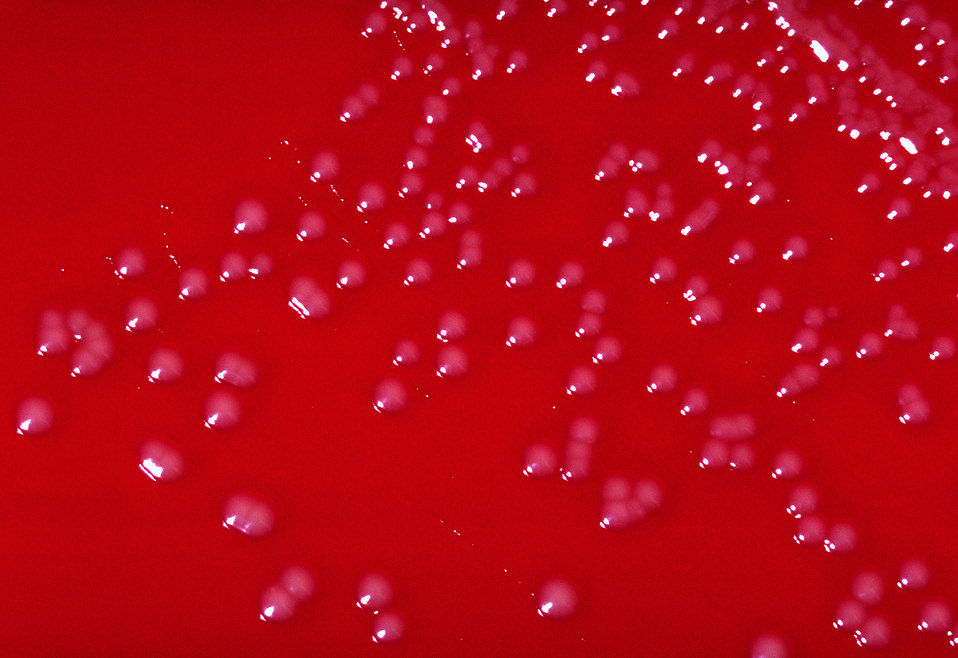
This blood agar culture is growing colonies of Corynebacterium diphtheria var. belfanti bacteria.